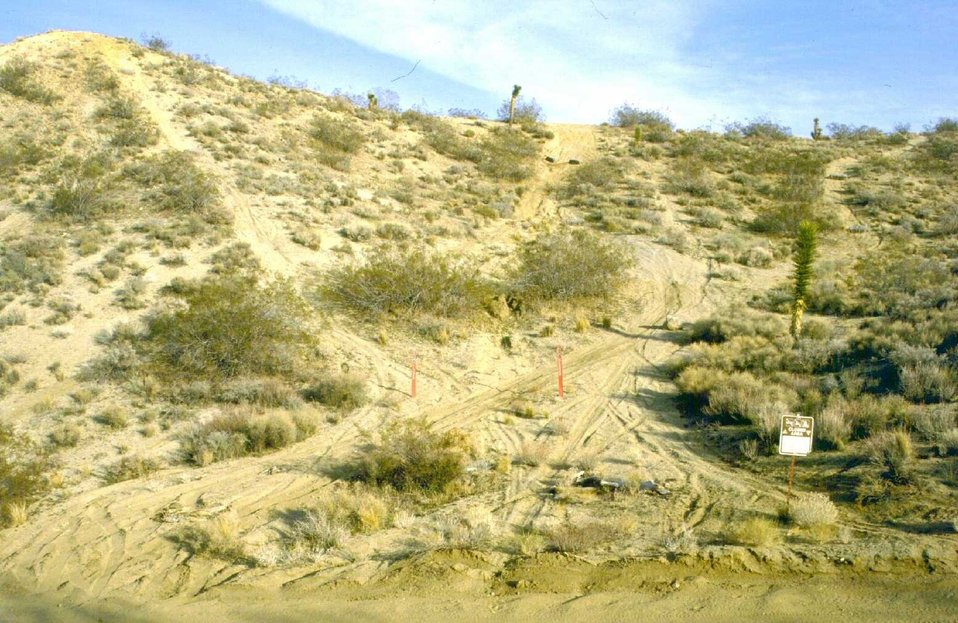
Active trespass route ignoring all red route closed and larger closed area signs.